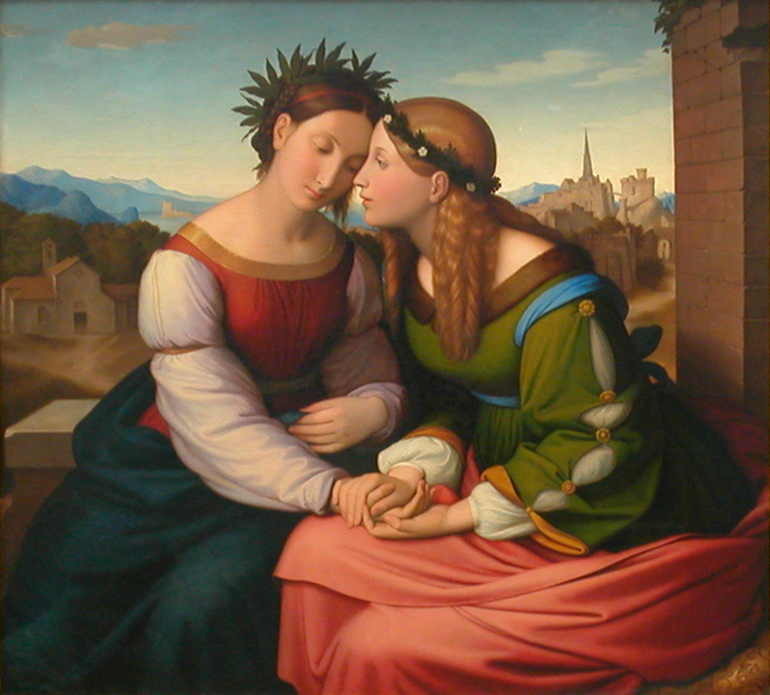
'Italie et Allemagne', oeuvre de F. Overbeck (1828) (3259994669)